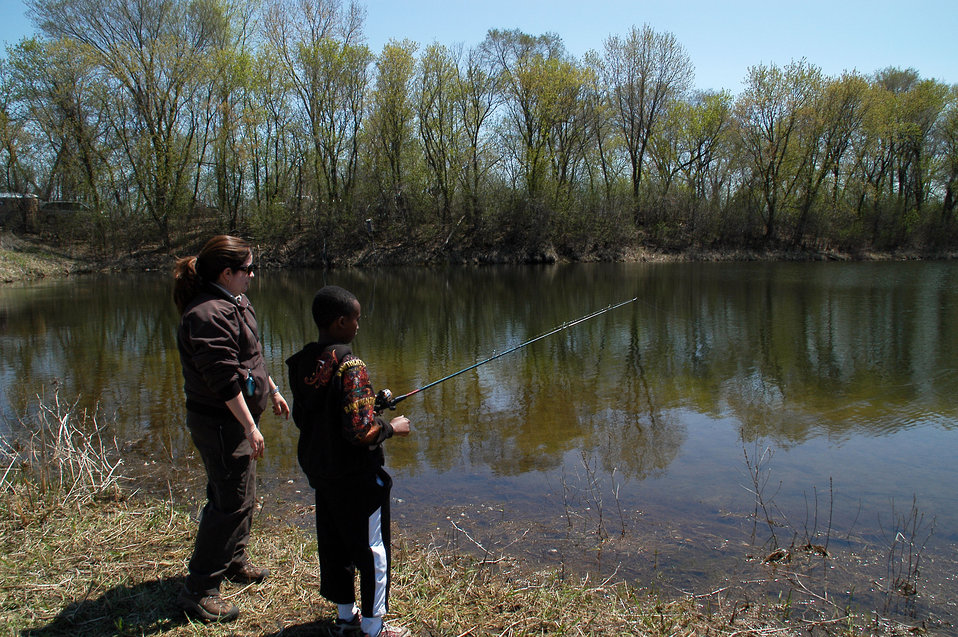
Kid Fishes with Help from Laura Bonneau, Visitor Services Manager at MN Valley NWR.